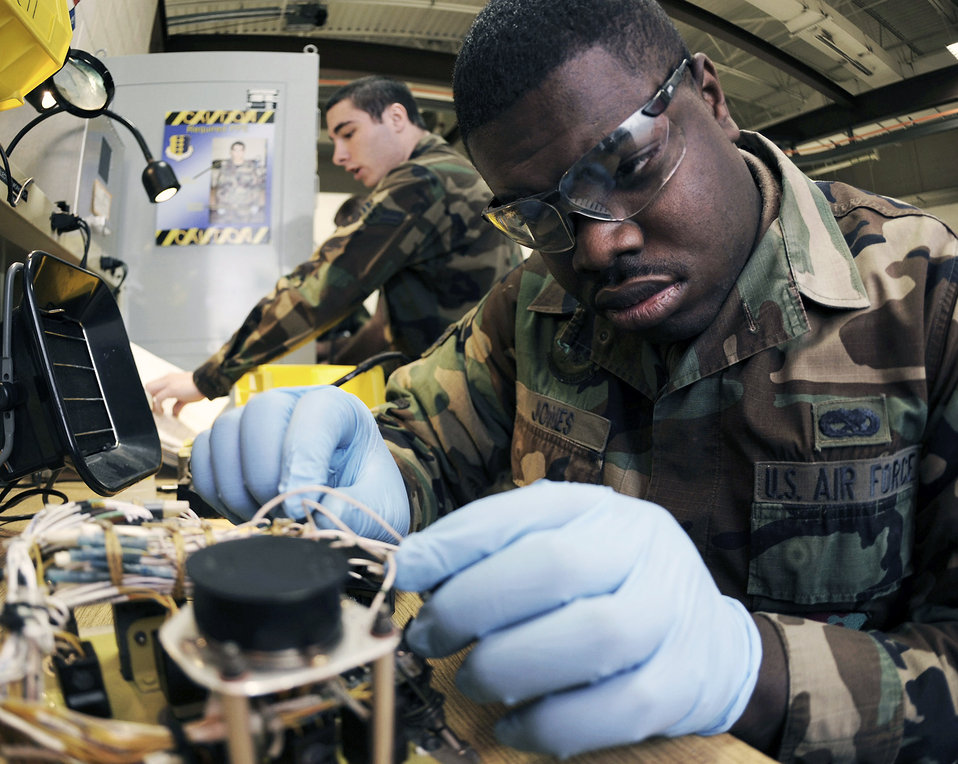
The tan wire goes here...

Airman 1st Class Rashad Jones performs maintenance on an alternate throttle control April 10 at Ellsworth Air Base, S.D. Airman Jones is a 28th Maintenance Squadron electrical and environmental apprentice.